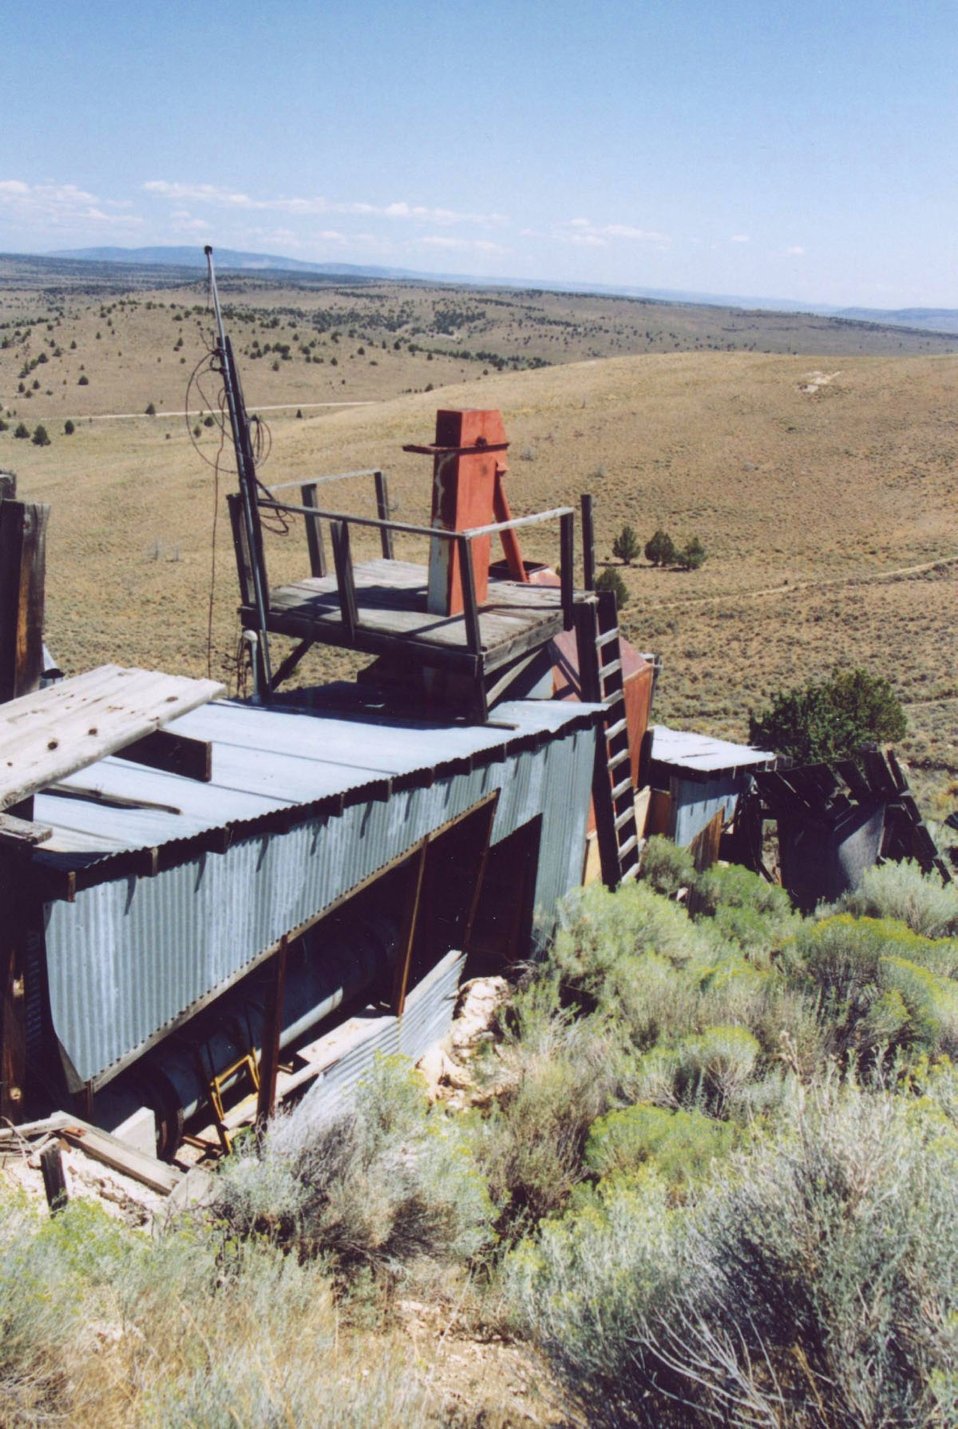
Glass Butte 4 Abandoned Mine Lands just before hazmat clean up. 8/22/02 Photo by Mark Armstrong